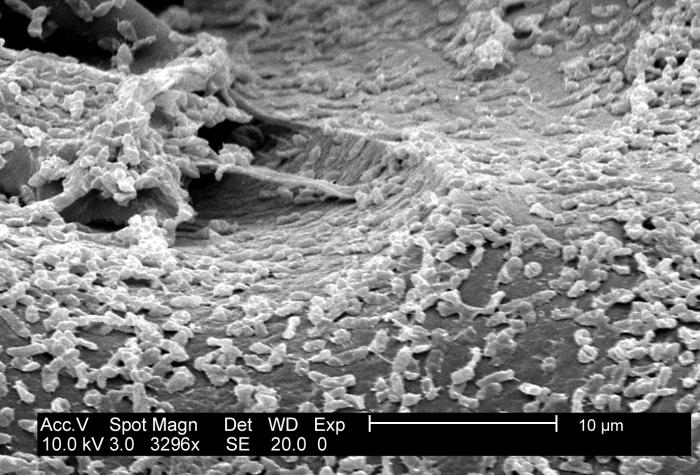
This SEM depicts a P. mirabilis (ATCC 29906) biofilm growing on PC (polycarbonate) coupons using a CDC biofilm reactor.